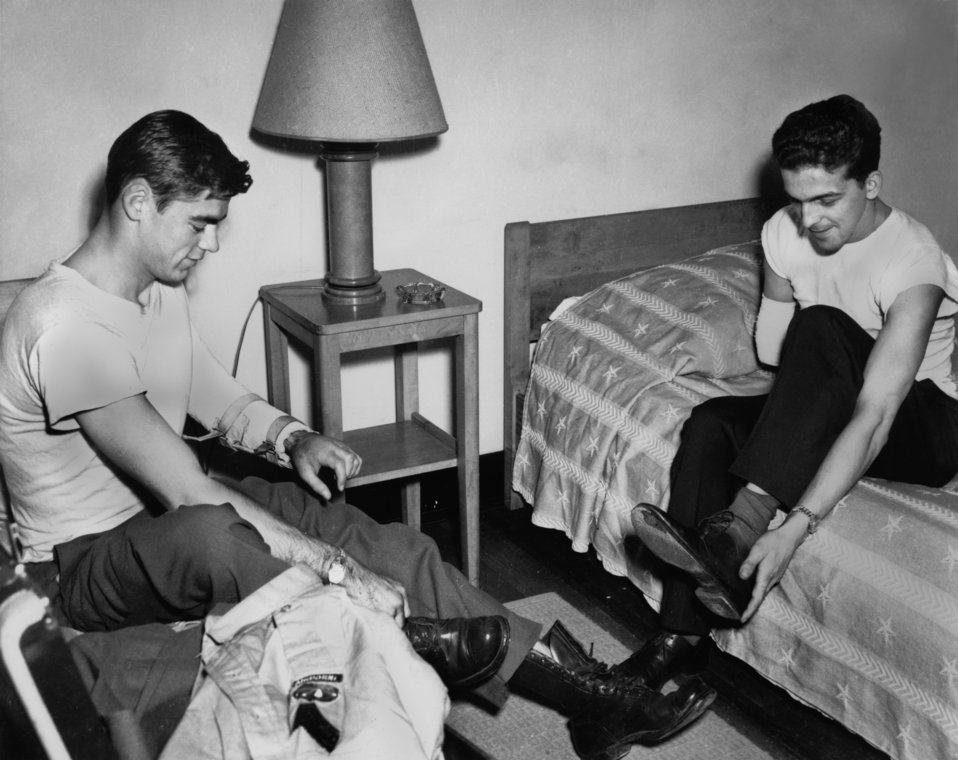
War Combat Vets visting Oak Ridge

Pro 198 DOE photo by Ed Westcott

War Combat Vets visting Oak Ridge for bond drive Oak Ridge Tennessee 12-11-1944